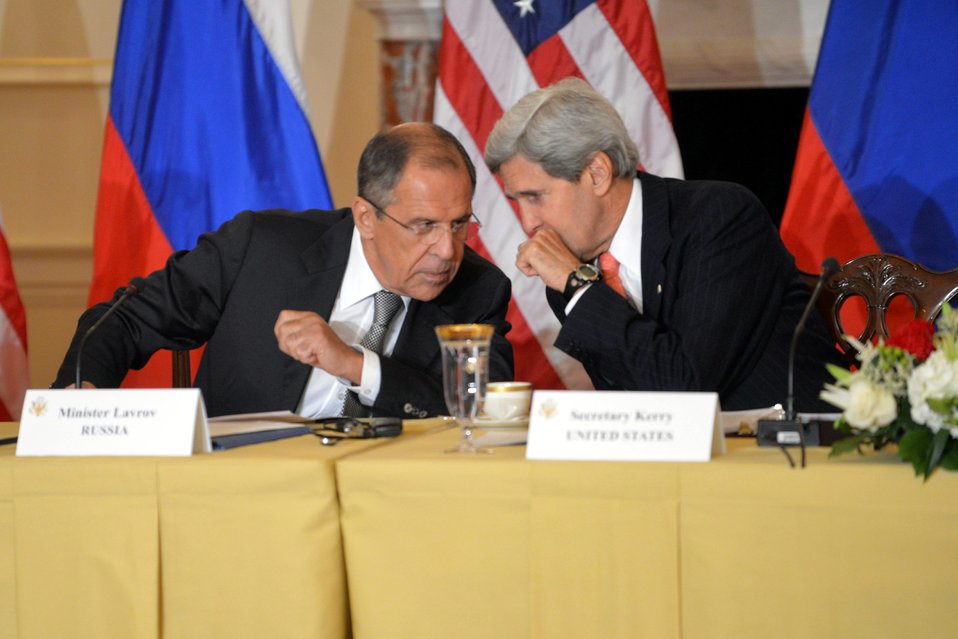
Secretaries Kerry and Hagel Meet With Russian Ministers Lavrov and Shoygu

U.S. Secretary of State John Kerry and U.S. Secretary of Defense Chuck Hagel meet with Russian Foreign Minister Sergey Lavrov and Russian Defense Minister Sergey Shoygu at the U.S. Department of State in Washington, D.C., on August 9, 2013.